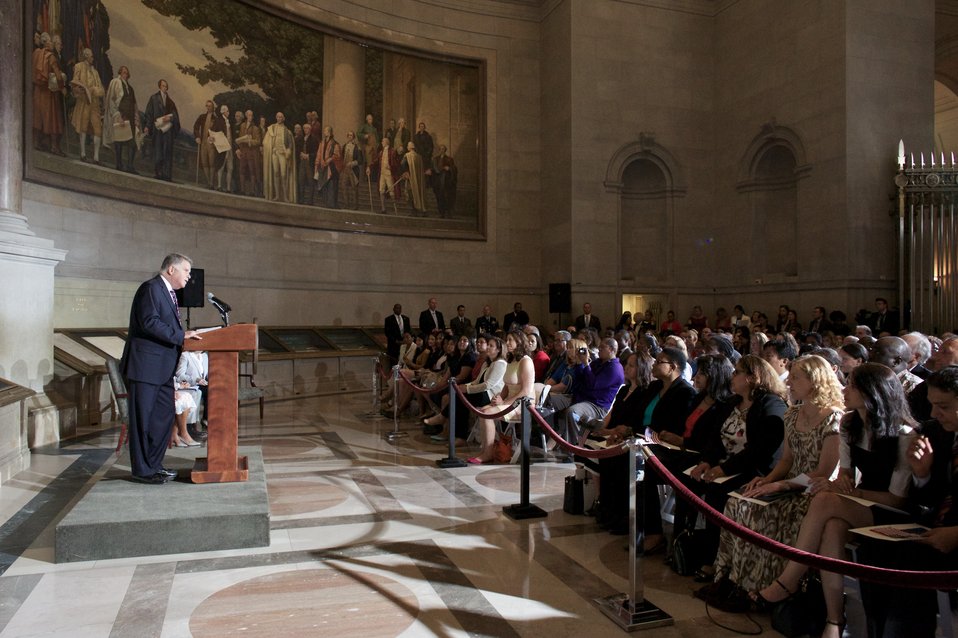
Naturalization Ceremony with Michelle Obama